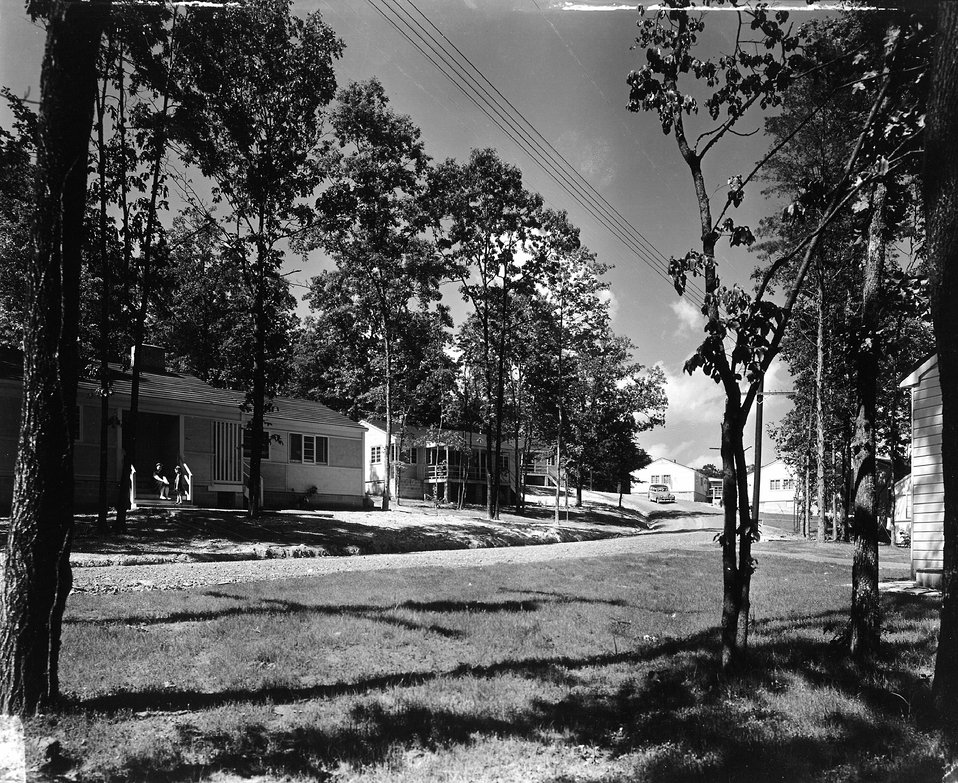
Cemesto housing. c. 1944